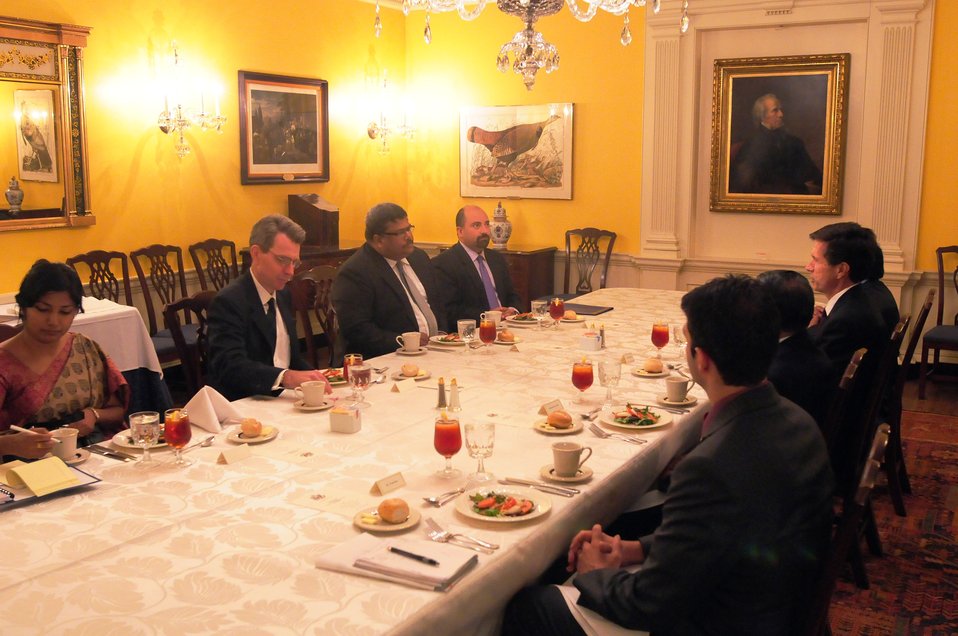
Assistant Secretary Blake Participates in a Working Lunch

U.S. Assistant Secretary of State for South and Central Asian Affairs Robert O. Blake and representatives of the Bureau of South and Central Asian Affairs participate in a working lunch with Bangladeshi Foreign Secretary Mijarul Quayes at the U.S. Department of State in Washington, D.C., on June 29, 2010.